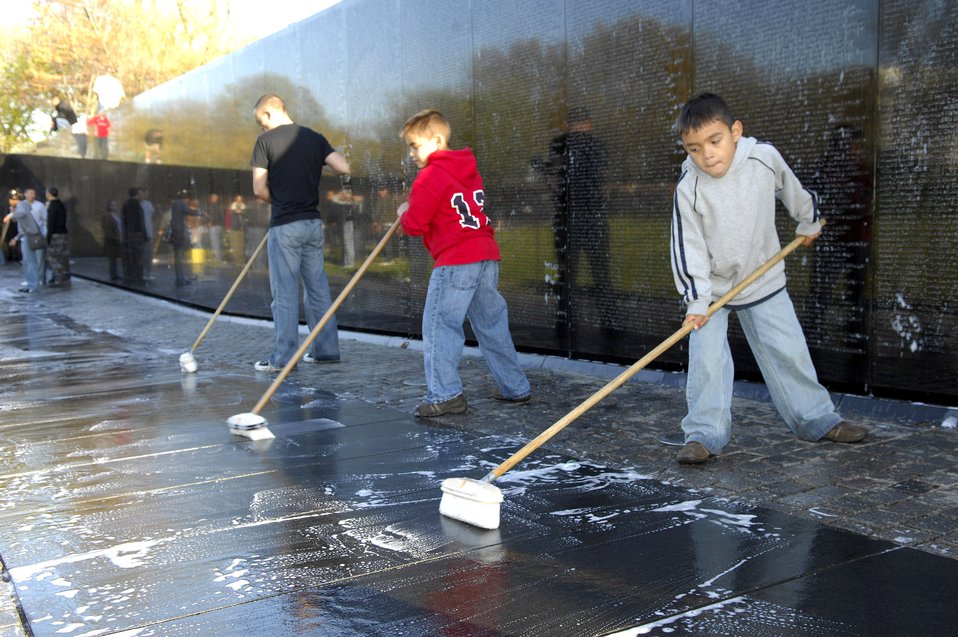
Cleaning the Wall

Nine-year-old Christian Williams (center) and 6-year-old Phoenix Williams scrub panels at the Vietnam Veterans Memorial in Washington, D.C., April 21. Members of the Air Force Sergeants, with volunteers from Charleston, Shaw, Pope, Seymour Johnson, Langley and Bolling Air Force Bases, were among those who helped in the project. The boys are the sons of Staff Sgt. Leslie Williams, assigned to Seymour Johnson AFB, N.C.